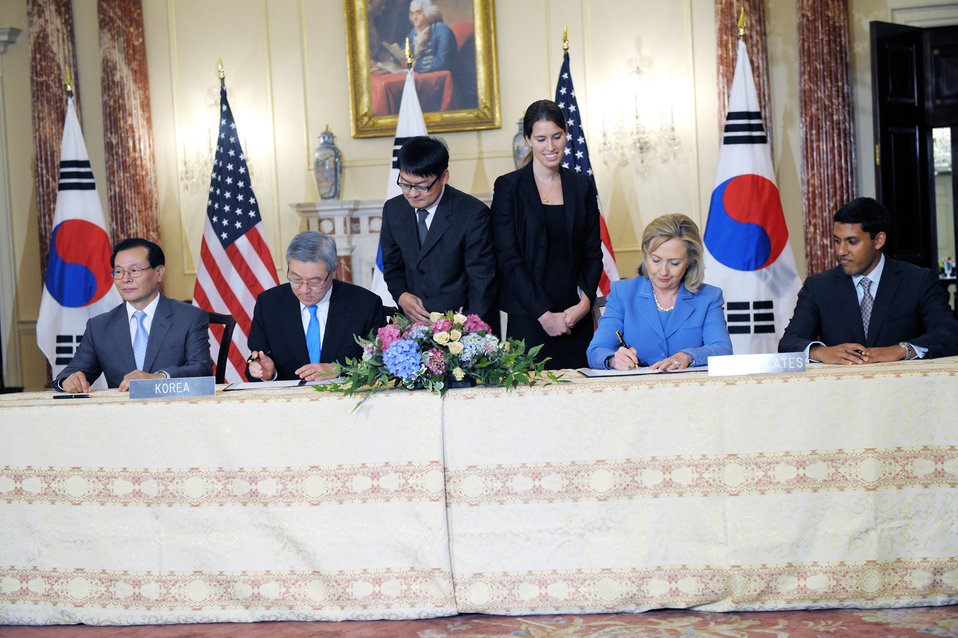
Secretary Clinton and Korean Foreign Minister Kim Sung-Hwan Participate in a Signing Ceremony

U.S. Secretary of State Hillary Rodham Clinton and Korean Foreign Minister Kim Sung-Hwan participate in a signing ceremony, at the U.S. Department of State in Washington, D.C., on June 24, 2011.